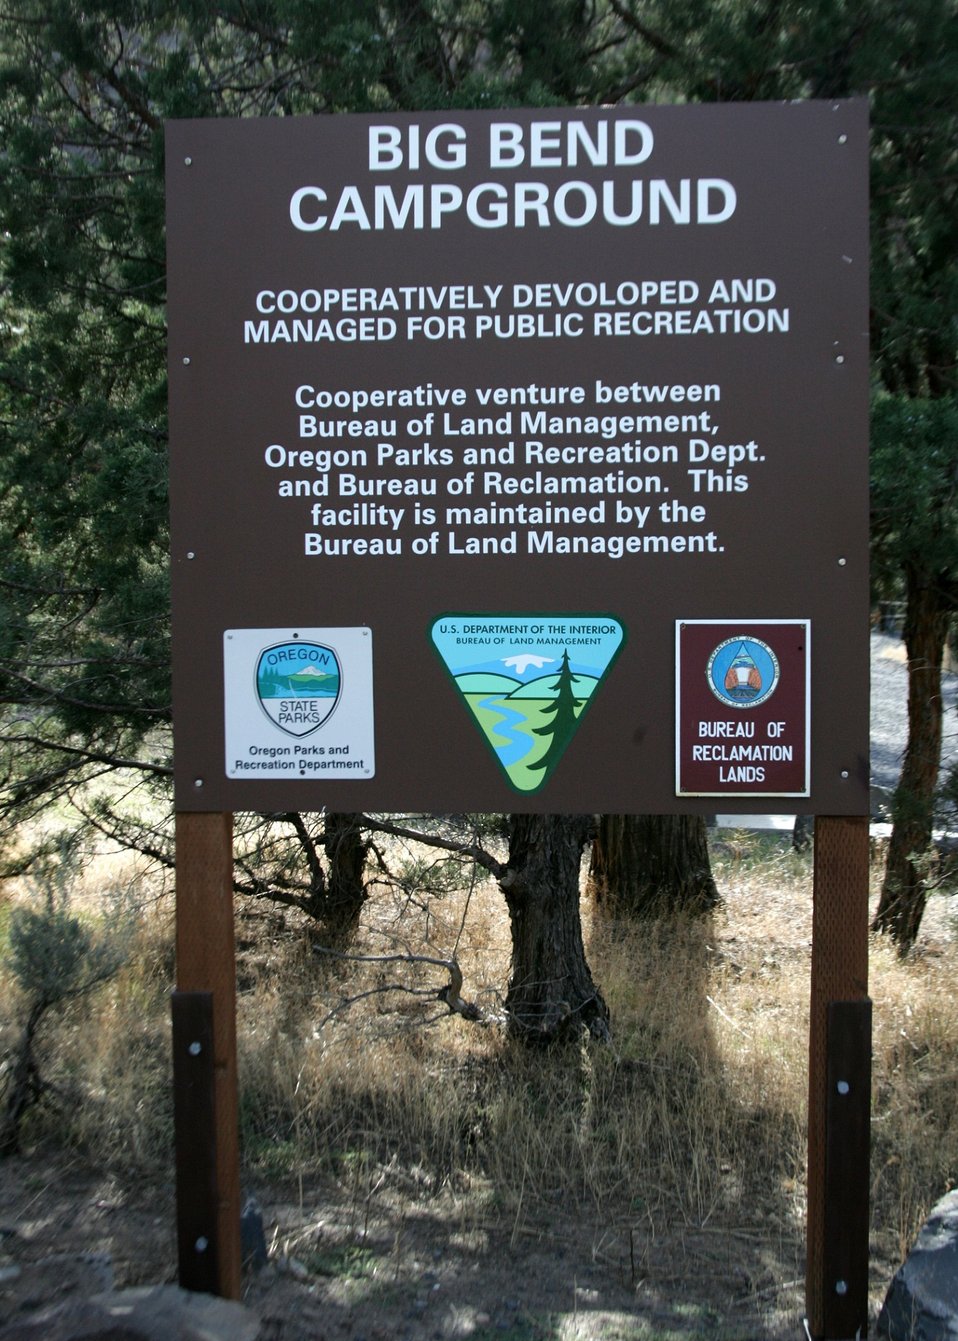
Big Bend Campground along the Lower Crooked River Backcountry Byway.